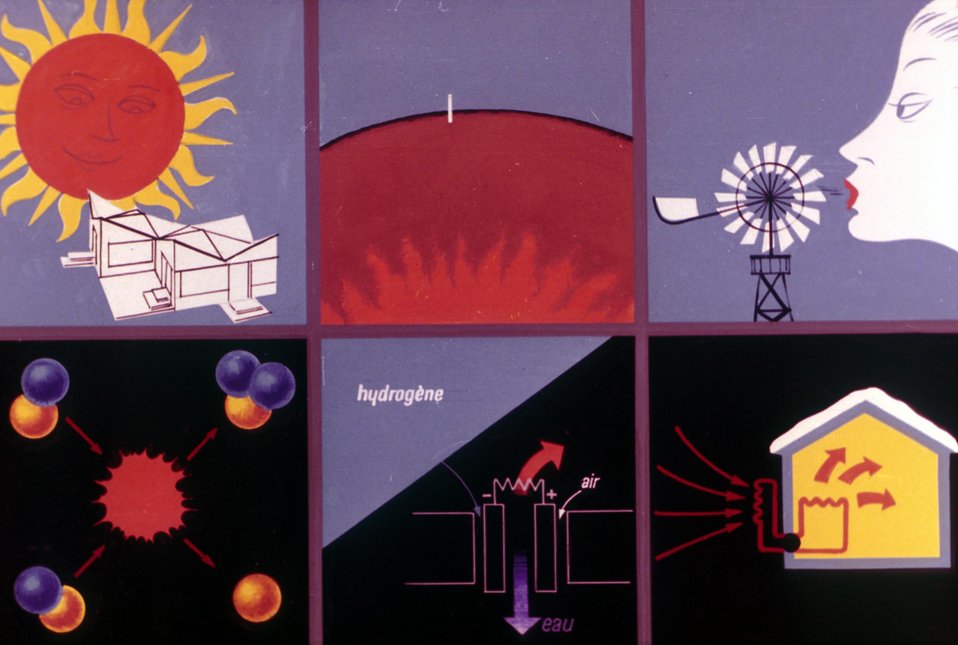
Les recherches sur l'Ðnergie.